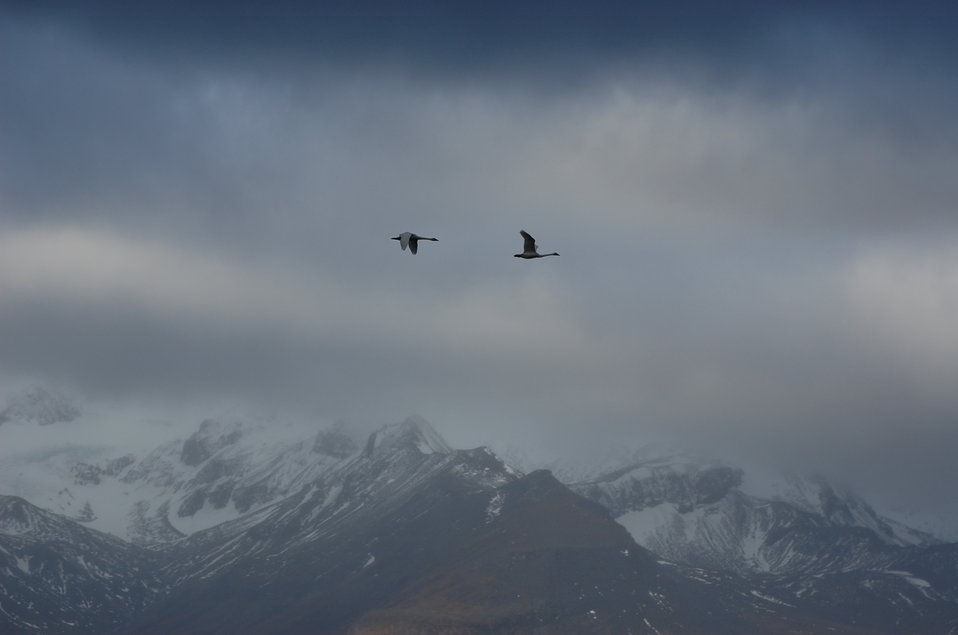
Tundra Swan

Izembek National Wildlife Refuge